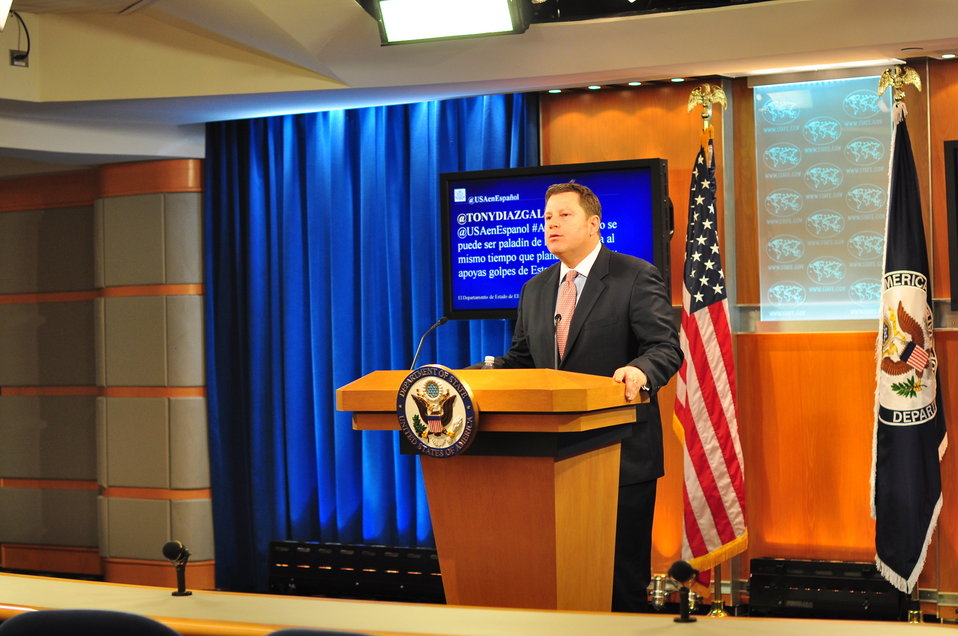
Acting Assistant Secretary Hammer Responds to #AskState Questions in Spanish

Acting Assistant Secretary of State Mike Hammer responds to #AskState questions during the U.S. Department of State's first Twitter Briefing in Spanish in Washington, D.C., on March 1, 2012.